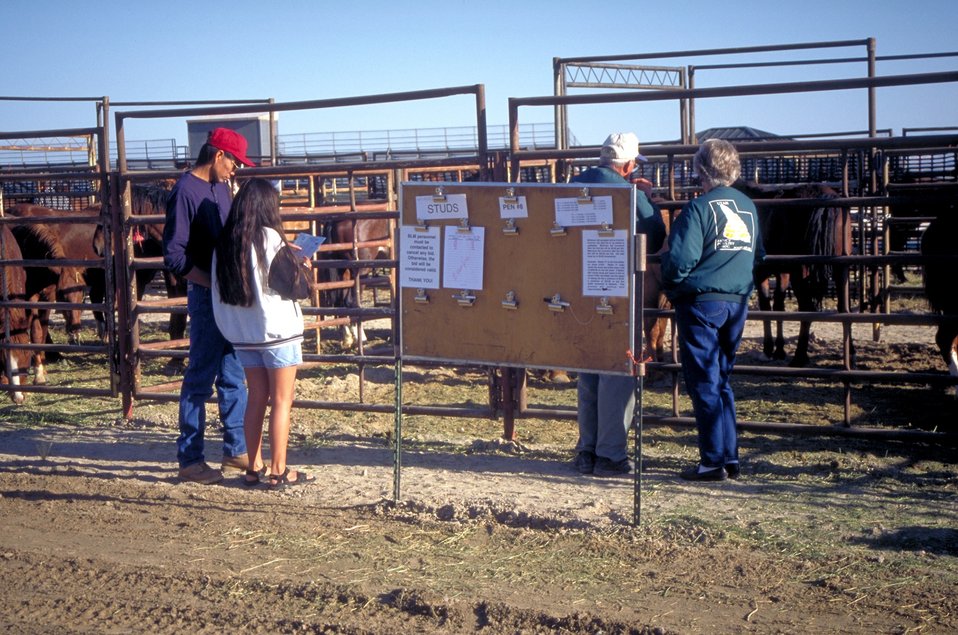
Utah Annual Wild Horse Festival.